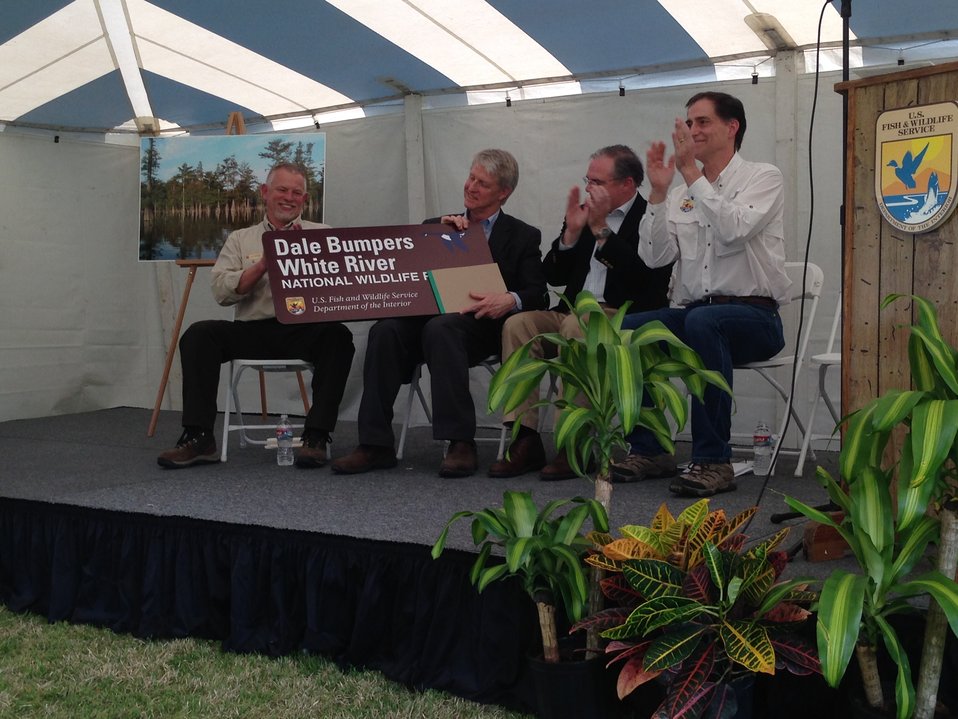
Senator Dale Bumpers renaming ceremony

At the White River National Wildlife Refuge renaming ceremony in honor of Senator Dale Bumpers.
Credit: USFWS.
www.fws.gov/refuge/white river/